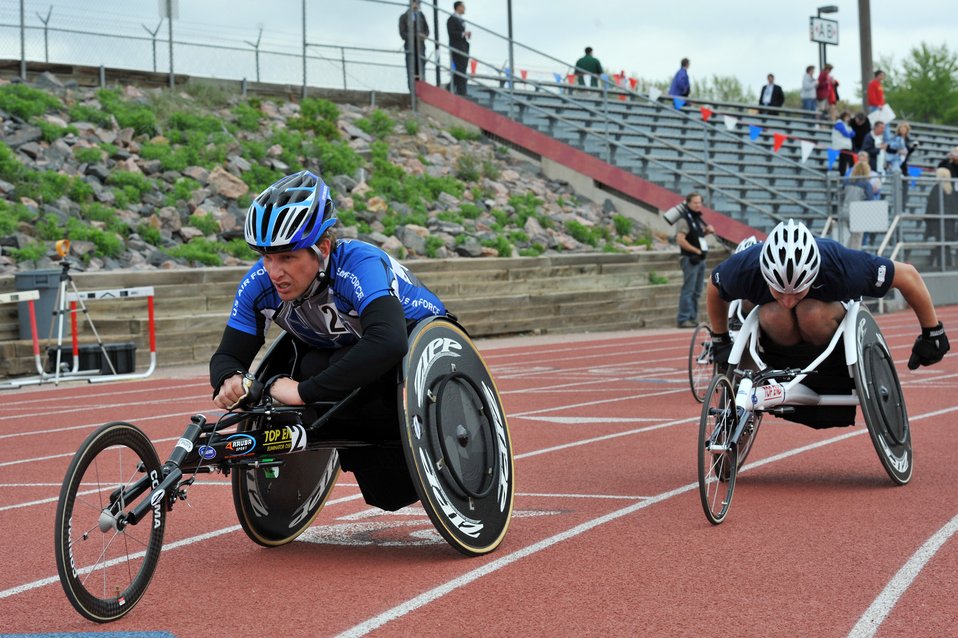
2011 Warrior Games

Air Force athlete Jason Morgan competes in the wheelchair 800 meter dash May 17, 2011, during the track competition at the 2011 Warrior Games at the U.S. Olympic Training Center in Colorado Springs, Colo. Some 200 wounded warriors and disabled veterans from all the military services are competing in paralympic-style athletic events May 16 through May 21.